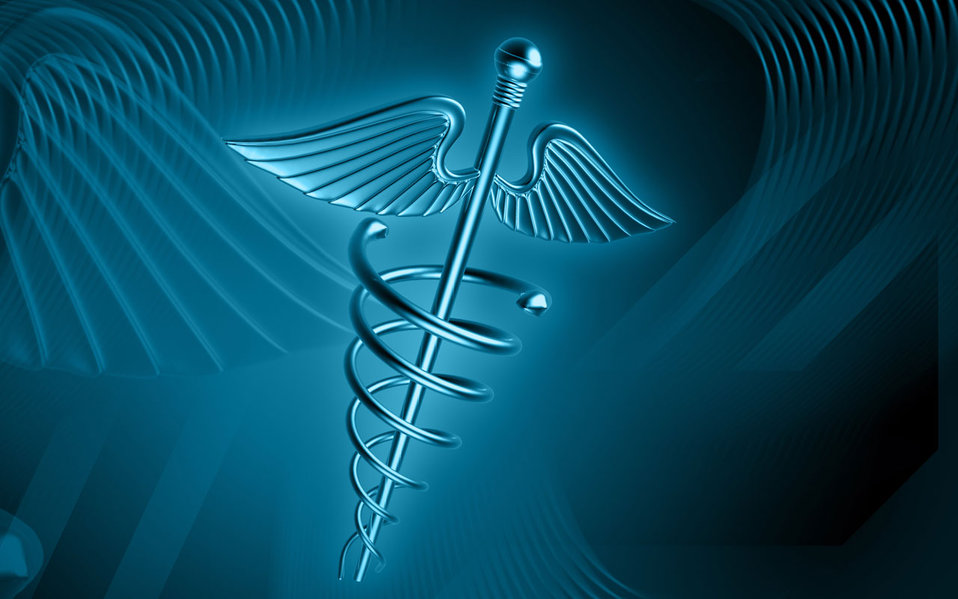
Medical logo

Digital illustration of medical logo in colour background.